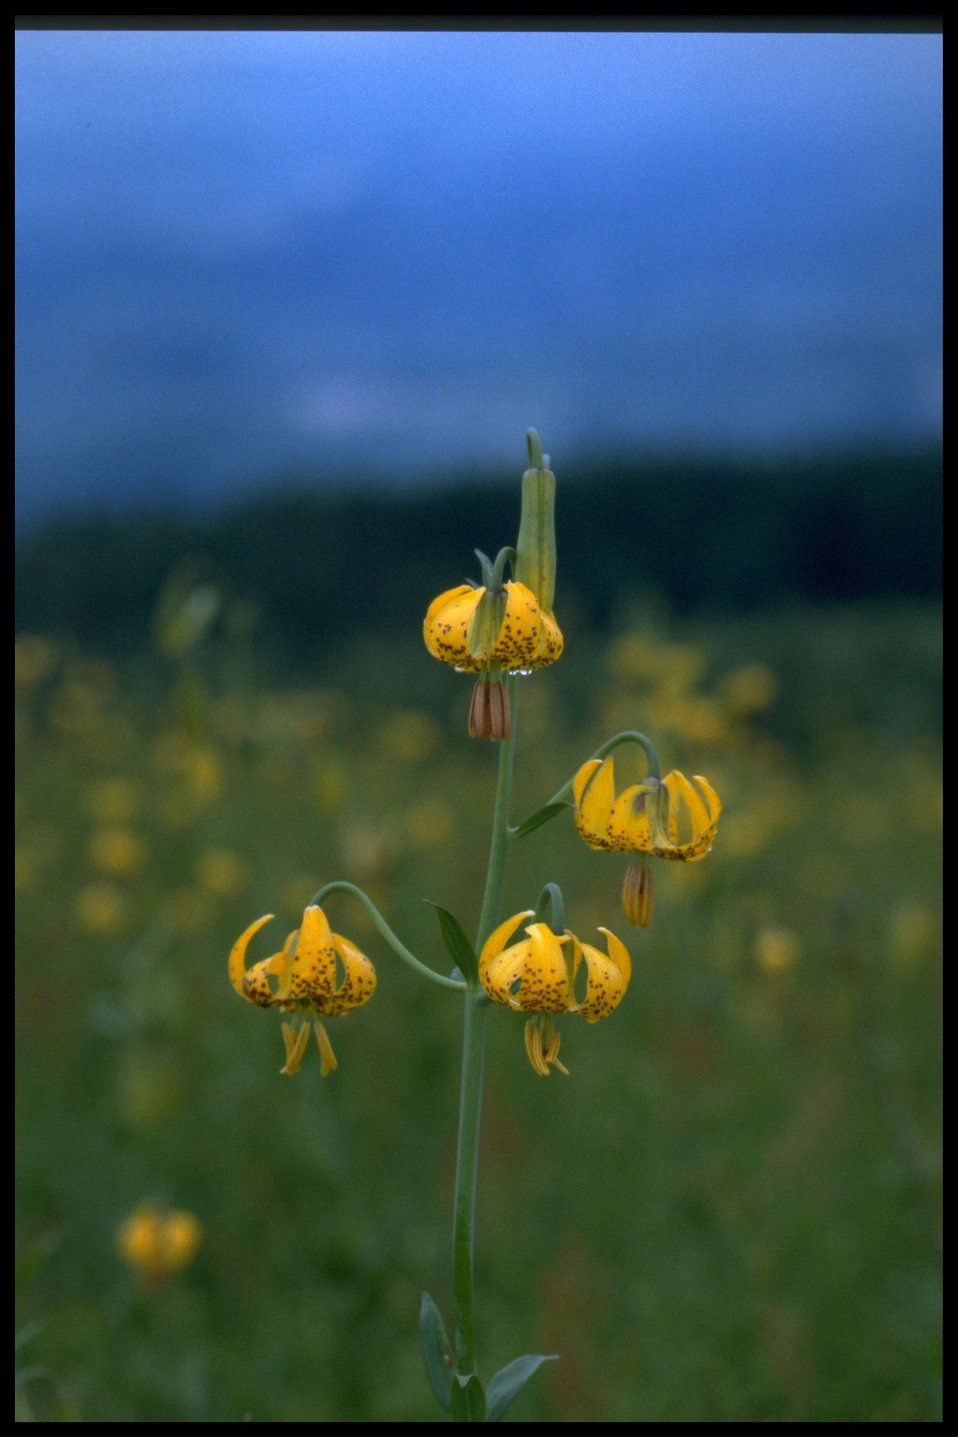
Medium shot of tiger lily, Lilium columbianum.